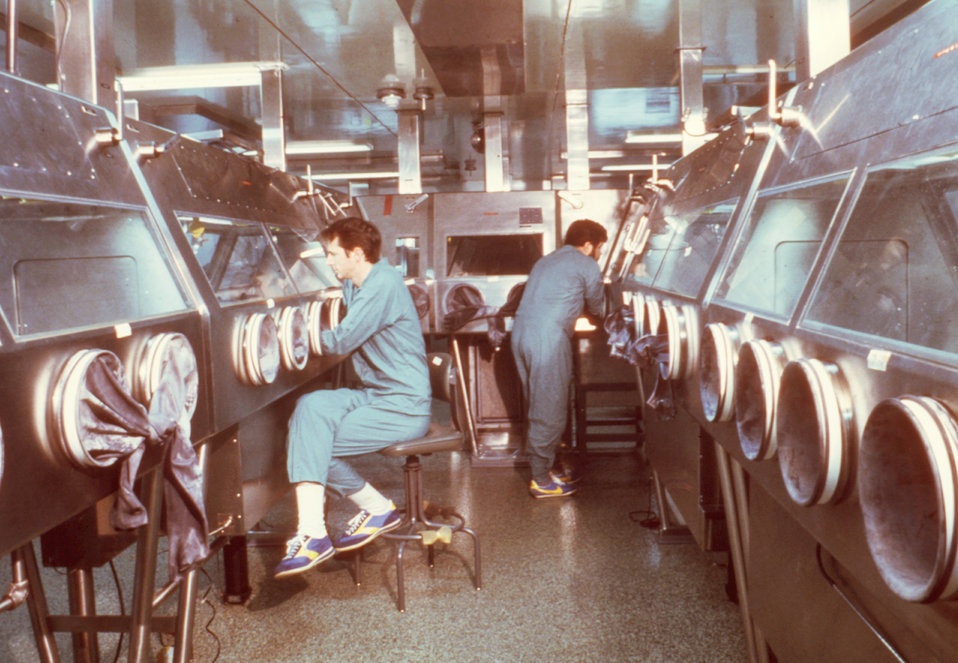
Here two CDC scientists are shown working in the specially designed Maximum Containment Lab, or BSL-4 facility.